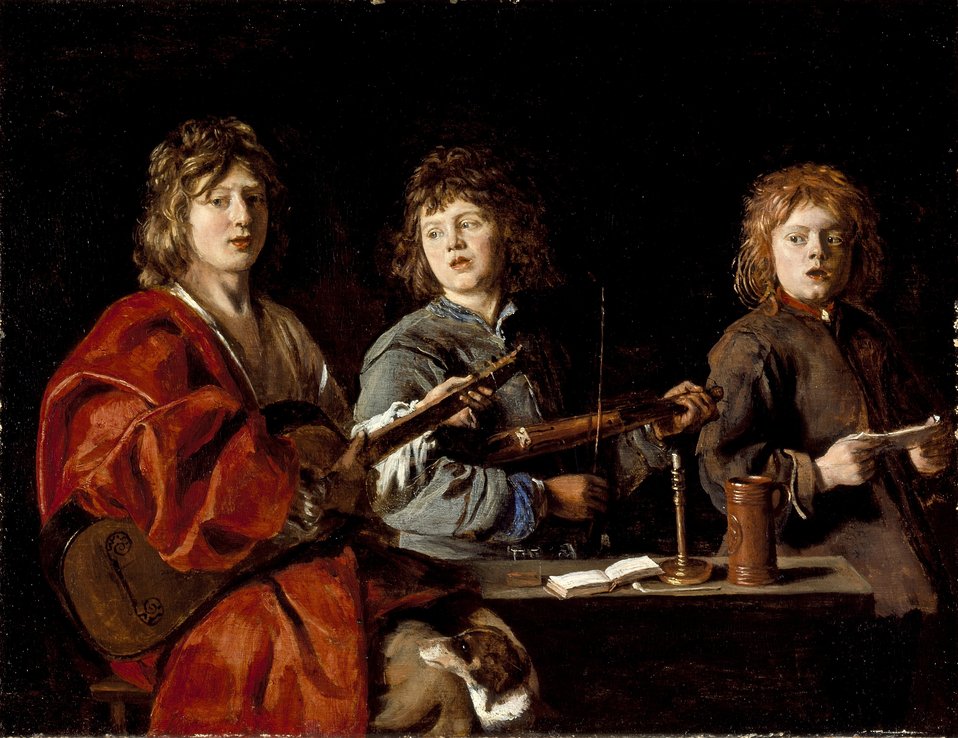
Antoine Le Nain - Trois jeunes musiciens